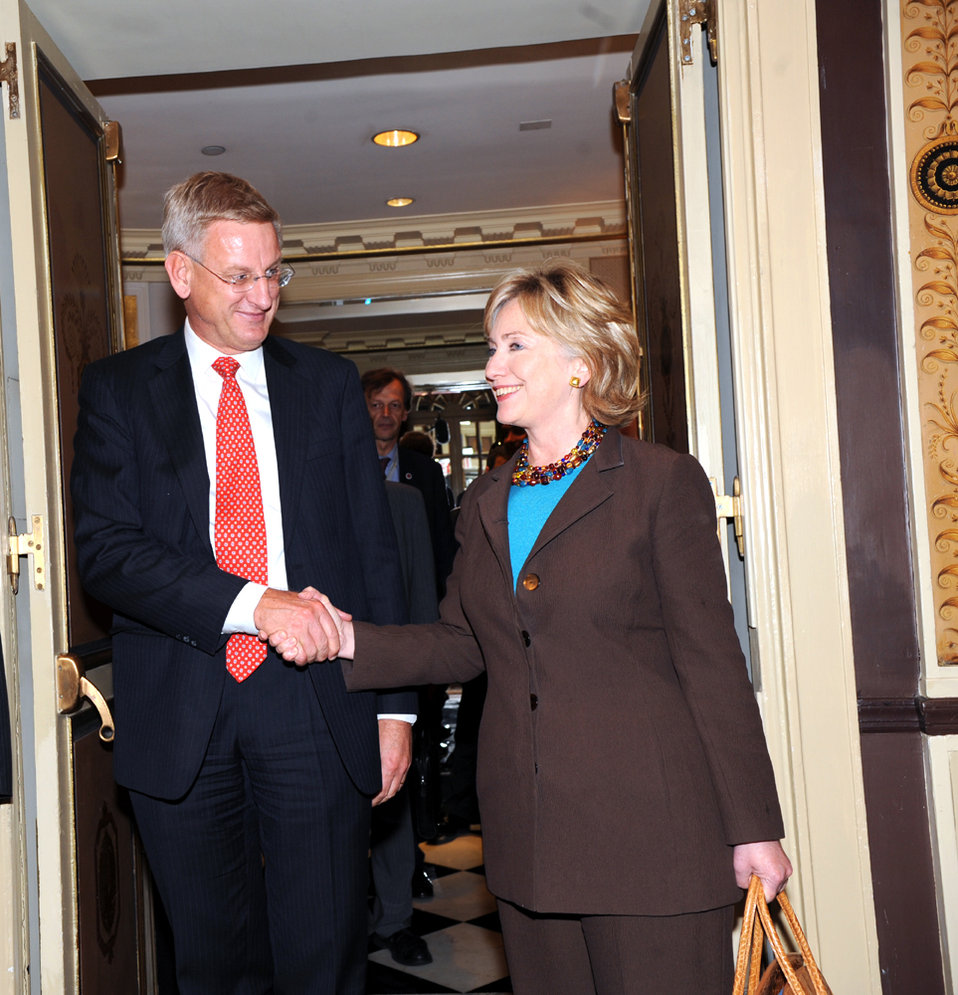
UNGA 2009: Secretary Clinton Participates in Meeting With EU Foreign Ministers

U.S. Secretary of State Hillary Rodham Clinton is greeted by Swedish Foreign Minister Carl Bildt during a EU Foreign Ministers meeting hosted by the Swedish Foreign Ministry at the Waldorf Astoria hotel during the 64th Session of the UN General Assembly in New York City, New York September 22, 2009.